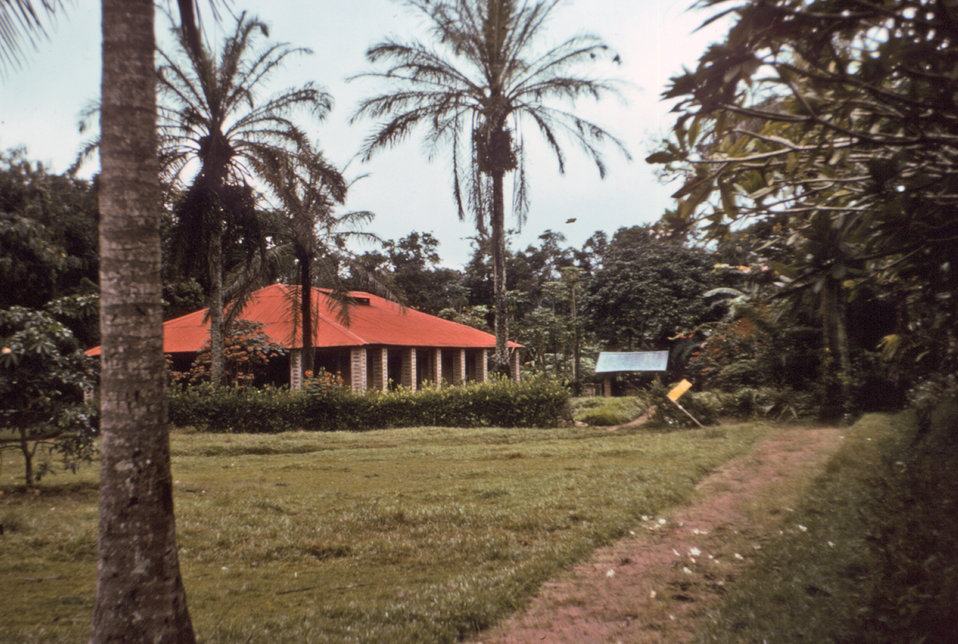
This Yambuku, Zaire (now known as the Democratic Republic of the Congo) hospital theatre block was used as a temporary ICU for Ebola patients during the country's 1976 outbreak. This location also housed the International Medical Commission's (IMC) radio station.